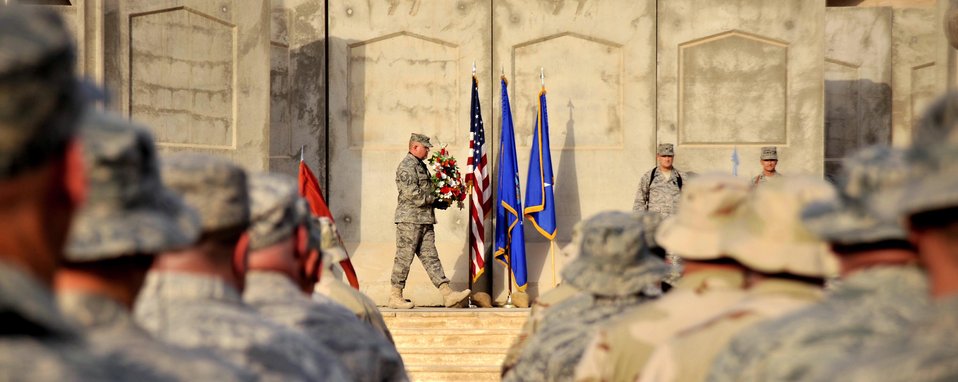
One moment in time changes the course of history

Master Sgt. Todd Mullane presents flowers in memory of police officers and firefighters who selflessly gave their lives trying to rescue others after the terrorist attacks of Sept. 11, 2001, and military members who died in the name of freedom since that date during a Sept. 11 ceremony at Sather Air Base, Iraq. Sergeant Mullane is a 447th Air Expeditionary Group firefighter.